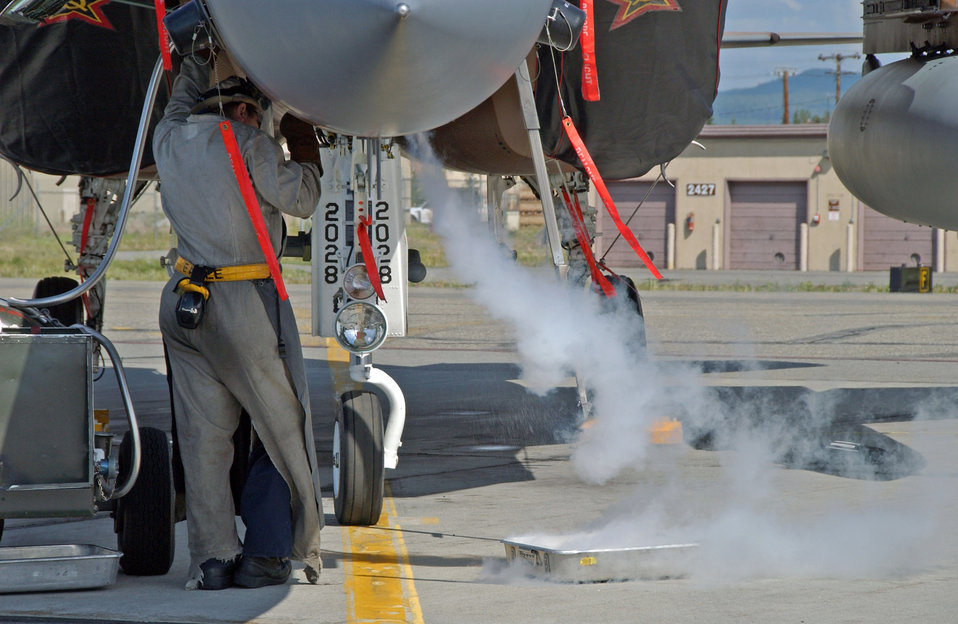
Red Flag-Alaska 07-3

Airman 1st Class Zachary Garretson services the liquid oxygen system on an F-15 Eagle July 9 on the Eielson Air Force Base, Alaska, flightline. The aircraft, from the 65th Aggressor Squadron at Nellis AFB, Nev., is at Eielson AFB to take part in Red Flag-Alaska 07-3, a multi-service, multi-platform coordinated, combat operations exercise, which runs through the July 27. Airman Garretson is a maintainer with the 57th Aircraft Maintenance Squadron at Nellis AFB.